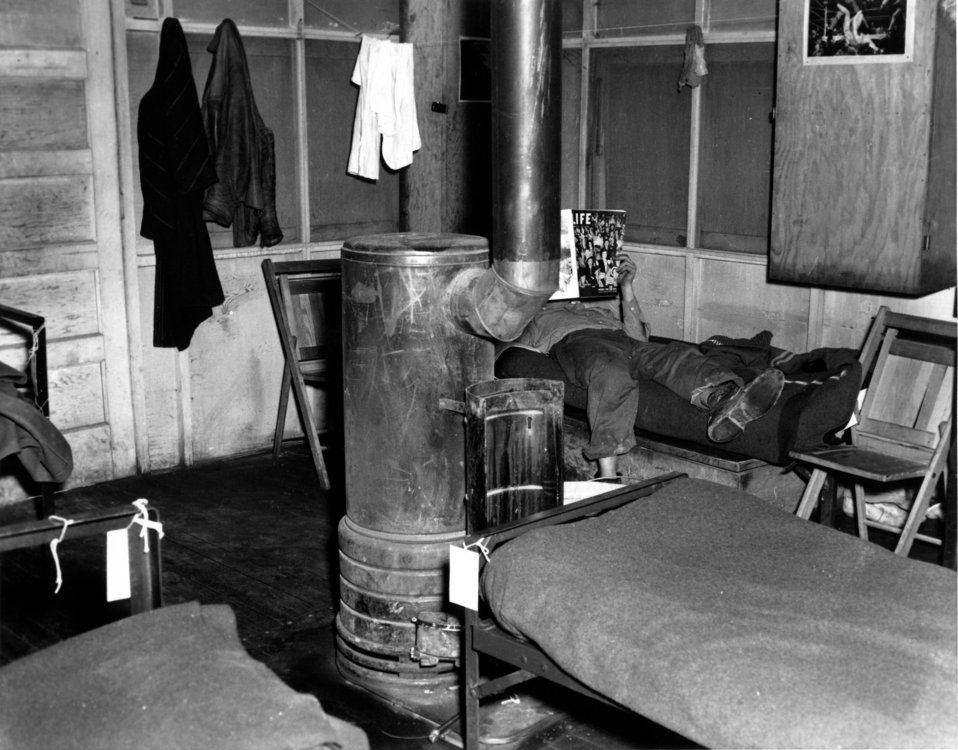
Housing at Oak Ridge